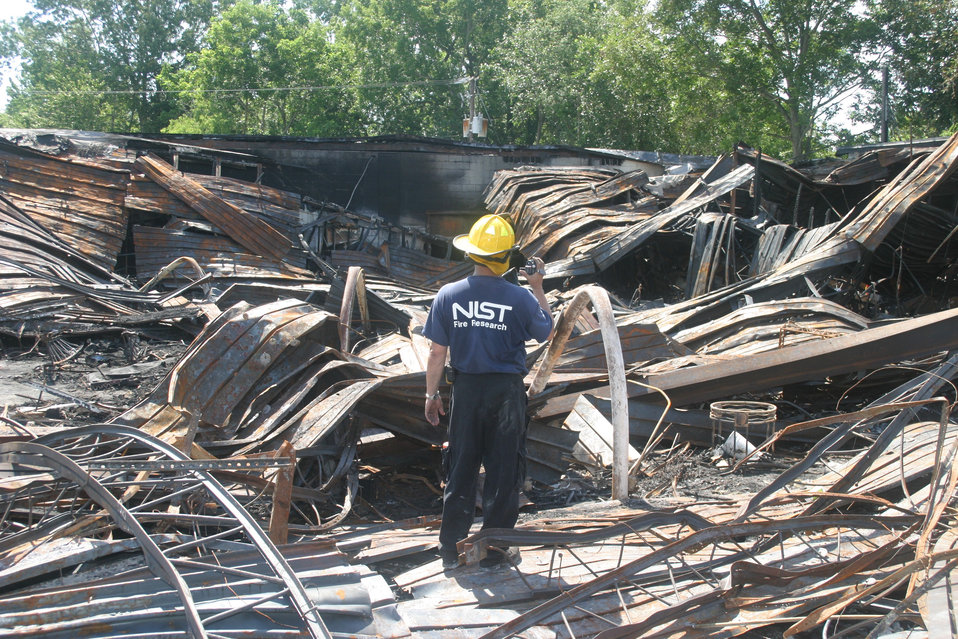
Remains of Sofa Superstore Fire in Charleston, NC

NIST researcher photographing the remains of the Sofa Super Store in Charleston, S.C., on June 19, 2007, the day after the fire that killed nine firefighters.